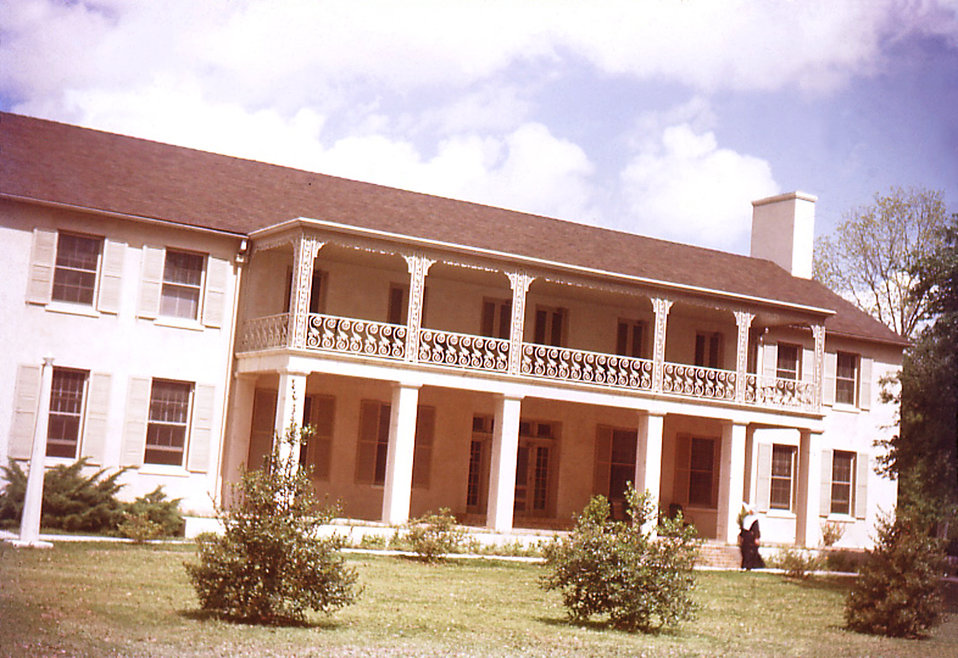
Depicted in this photograph were the "Sisters' of Charity" quarters, which housed the Sisters who were members of the leprosarium staff. Currently there are 21 Sisters on staff. The first group of four Sisters of the order founded by St. Vincent de Paul, and officially named Daughters of Charity, arrived at Carville, April 27, 1896, with Sister Beatrice Hart in charge. The sisters volunteered their services, in order to nurse the sufferers of leprosy who'd sought help at the leprosarium."Patients of the U.S. Marine Hospital in Carville, Louisiana, produced this set of 35 mm slides around 1950. In 2002, a patient's son donated the set, the only one known in existence, to the museum. The father, a patient at Carville for several years, brought these slides home around 1950 to give his family a snapshot of life at the national leprosarium. The act of quarantining patients for leprosy (HD) remained law in the state of Louisiana until 1957."